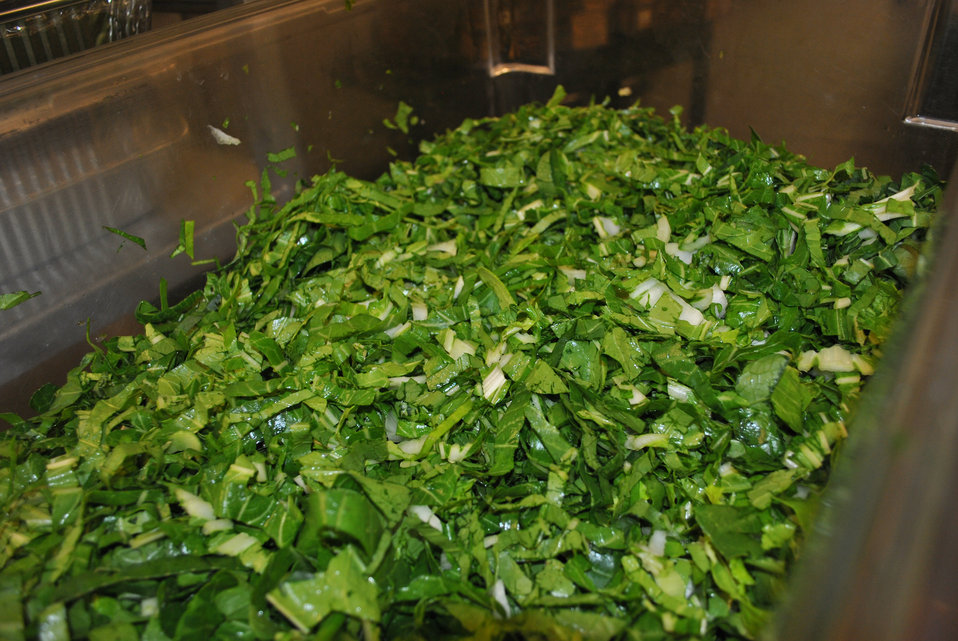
The edible portions of bok choy (also known as Chinese chard) are the shiny, dark green leaves and the thick, chalk-white stalks. The chopped leaves of the bok choy grown at U.S. Department of Agriculture’s headquarters Peoples Garden are part of the filling for the bean burritos at the DC Central Kitchen.